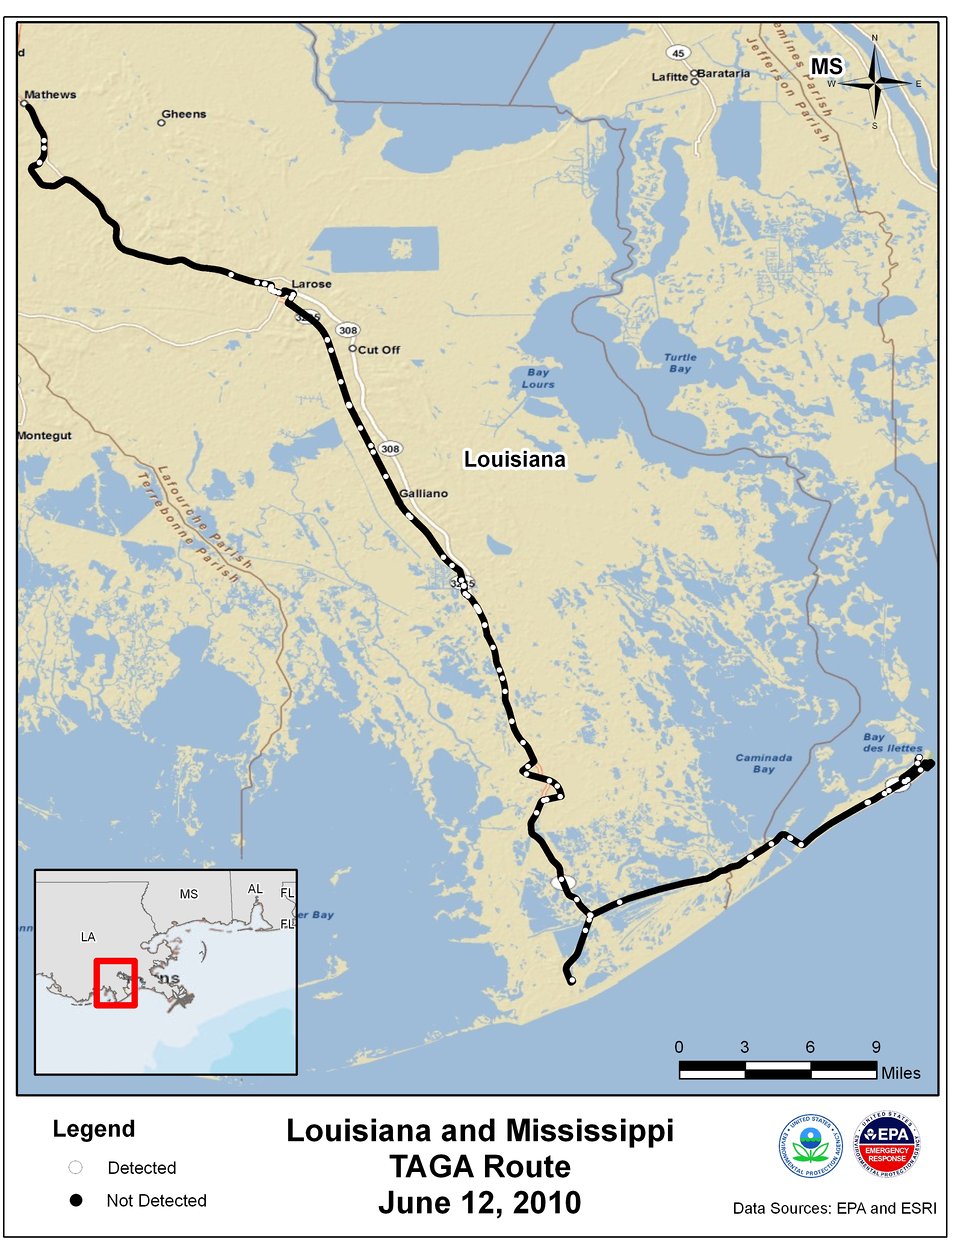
EPA TAGA Air Monitoring Locations June 12, 2010